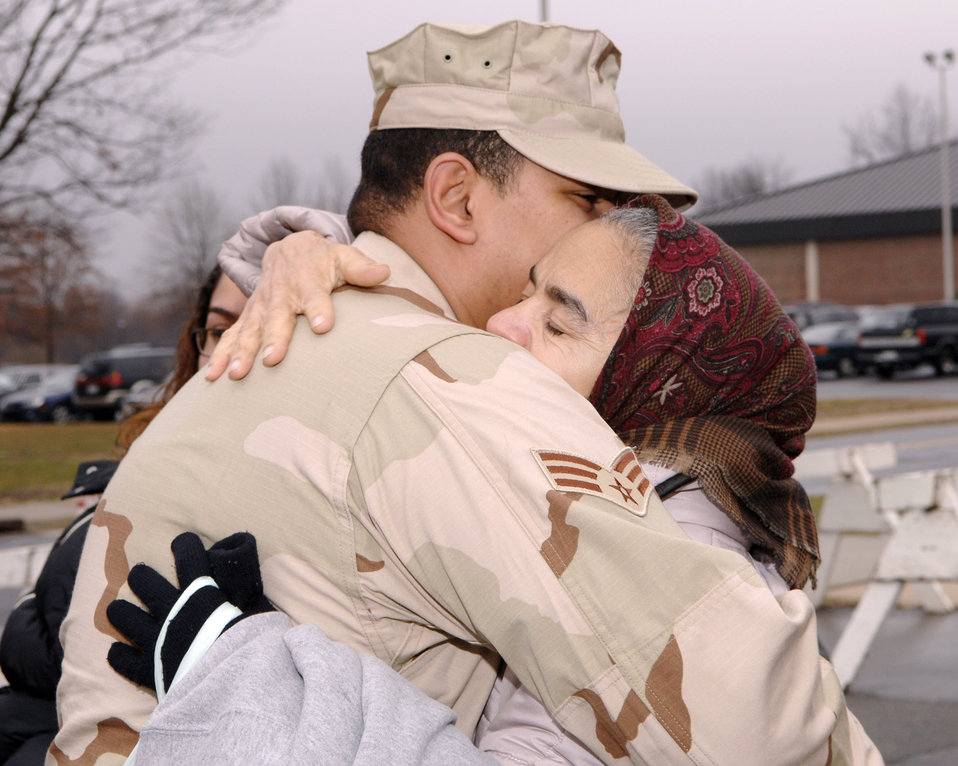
Saying goodbye

MCGUIRE AIR FORCE BASE, N.J. (AFPN) -- Senior Airman Isaac Candelario hugs his grandmother, Digna Medina, goodbye before deploying Jan. 23. Airman Candelario is assigned to the 88th Aerial Port Squadron here. Fourteen Airmen from the 88th and 35th APS deployed to Afghanistan for 120 days.